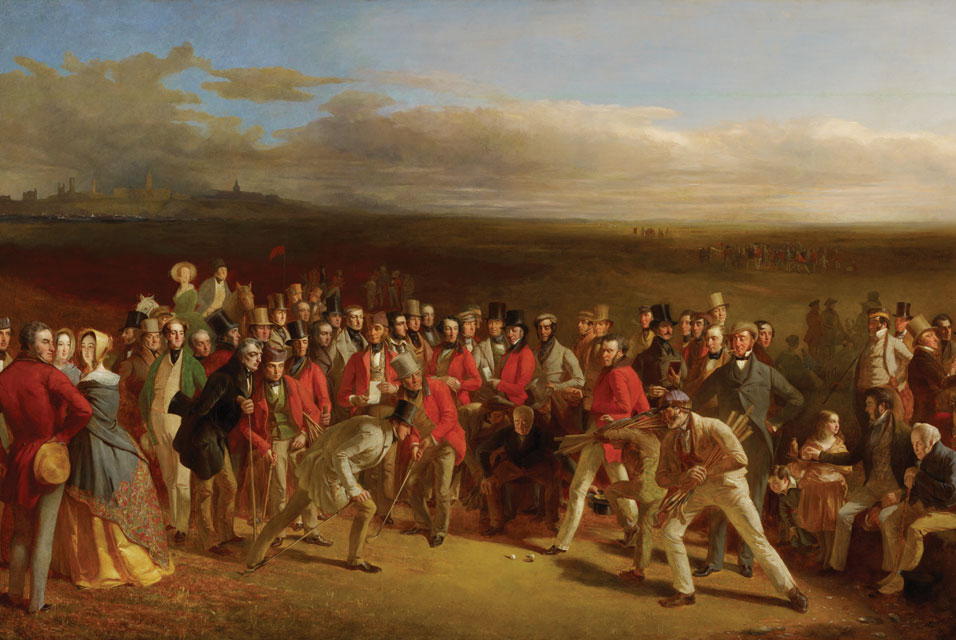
'The Golfers' by Charles Lees, 1847, oil on canvas, National Galleries of Scotland, Edinburgh